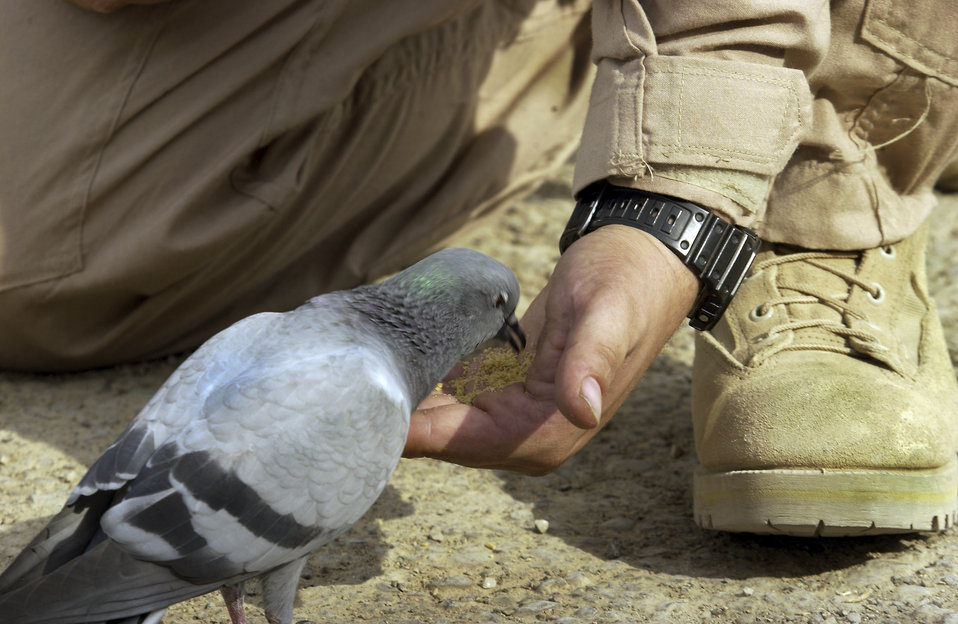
Fine dining

BAGHDAD INTERNATIONAL AIRPORT, Iraq -- Staff Sgt. Steve Sirois, an HH-60 Pave Hawk flight engineer, feeds Bird, a pigeon his unit has been caring for since they deployed here. Bird was rescued and nursed back to health by airmen of the 301st Expeditionary Rescue Squadron. Sirois and other 101st ERQS airmen began caring for and feeding Bird when they replaced the 301st.